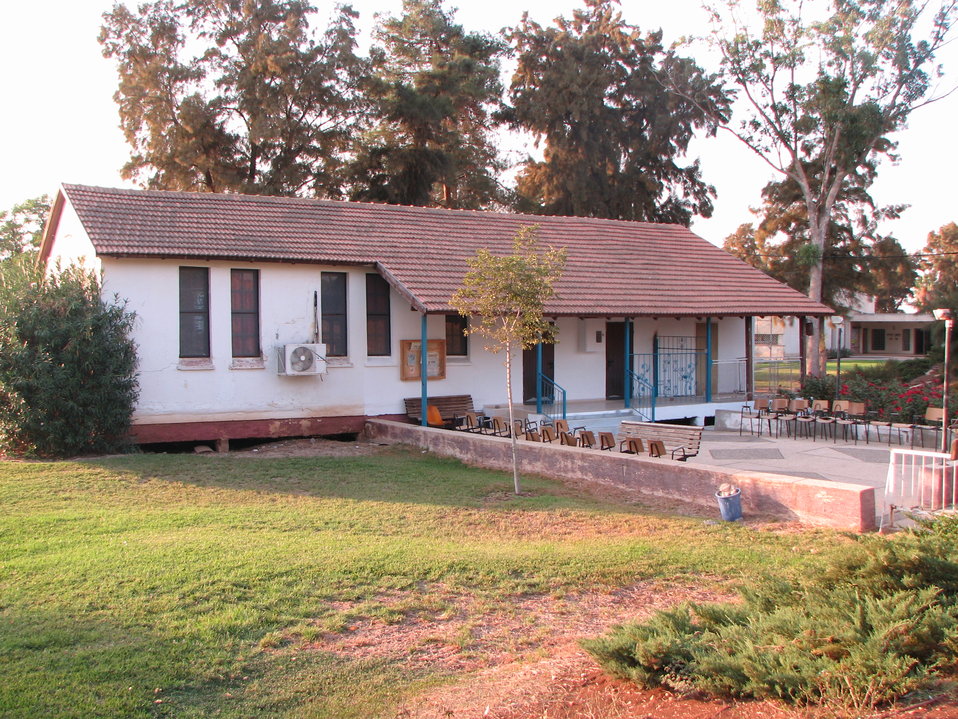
עברית: בית הכנסת במושב דבורה